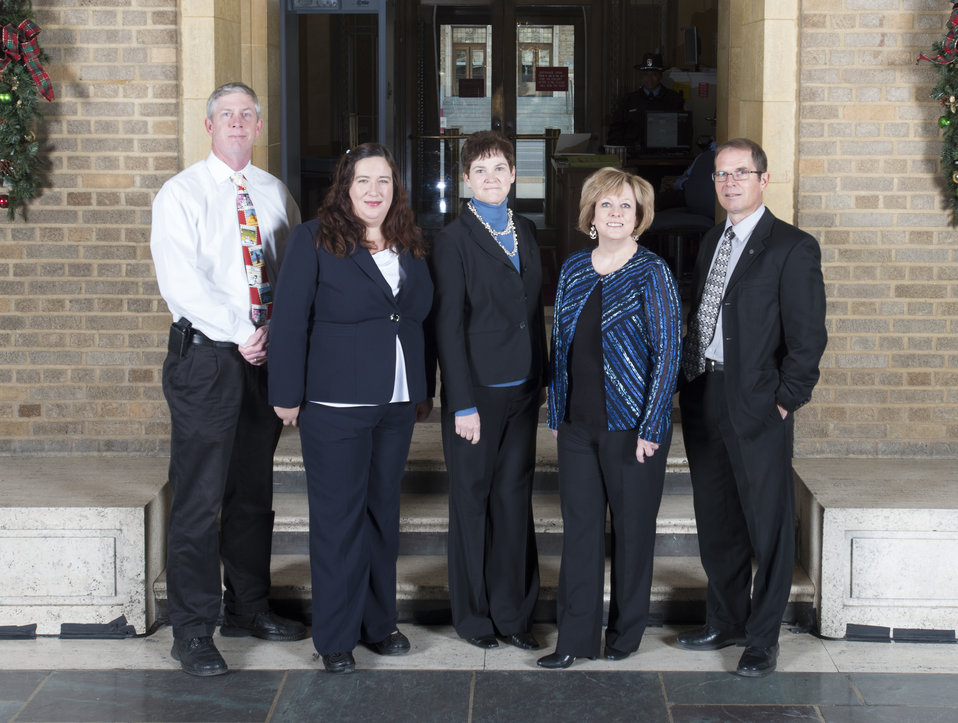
Agriculture Deputy Secretary Krysta Harden stands with the Gold Presidential Volunteer Service Awardees on the patio at the U.S. Department of Agriculture (USDA) in Washington, D.C. on Wednesday, Dec. 11, 2013. The President’s Gold Volunteer Service Award is given to employees that have served 500 hours or more of service with a qualifying organization over the 12-month period beginning July 1, 2010, and ending June 30, 2011.